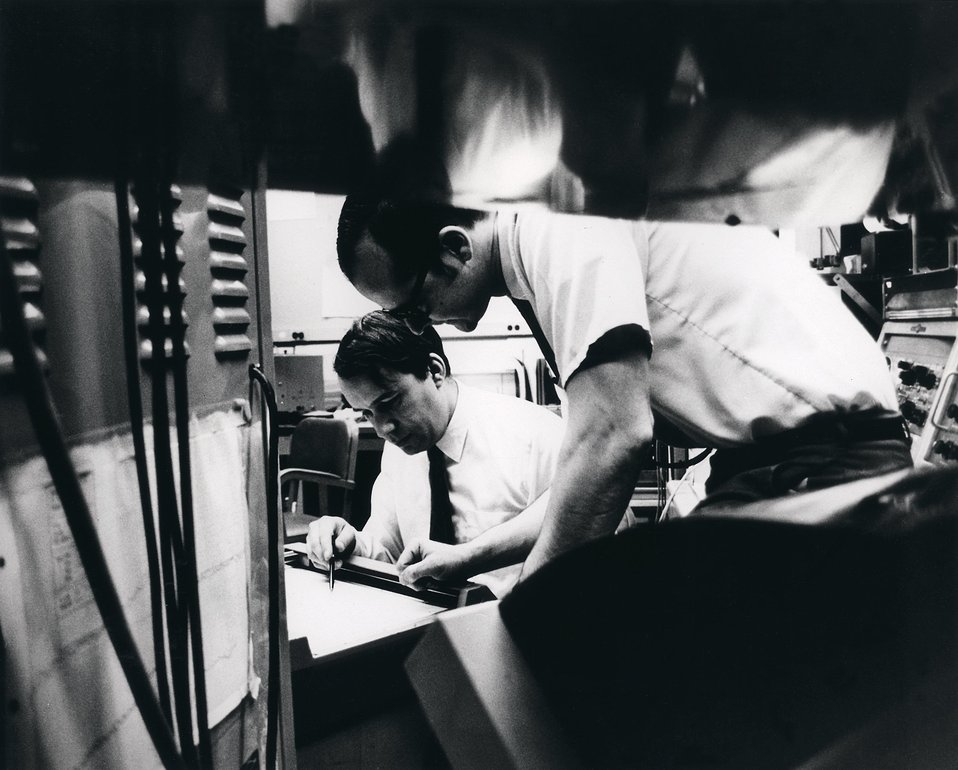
Argonne chemists examine a chart during an experiment with a magnetic spectrograph.
c.1970